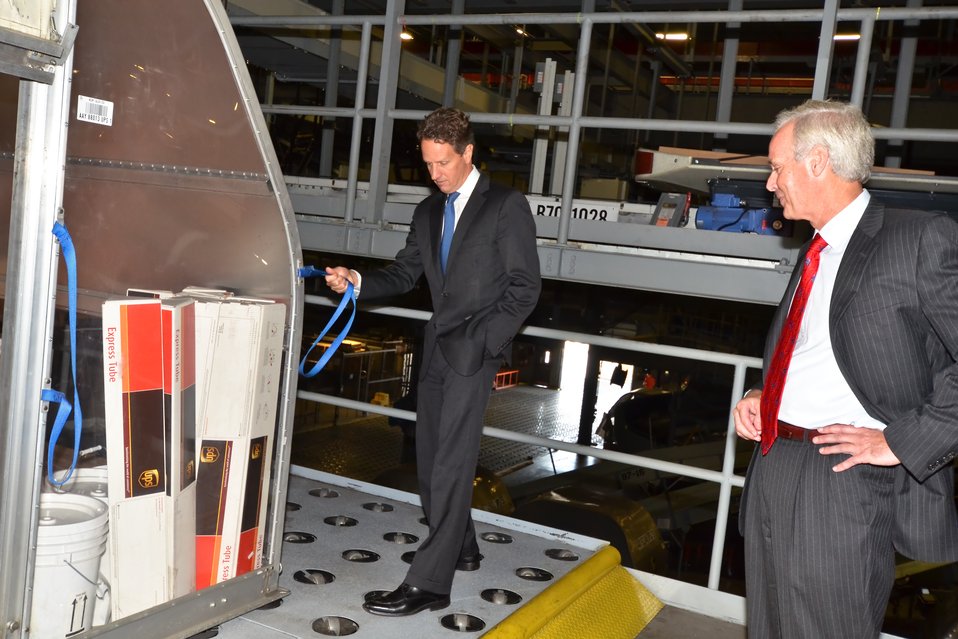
Secretary Geithner Visits UPS

To underscore the importance of investing in our nation’s infrastructure, Secretary Geithner toured UPS Worldport, UPS’s international air hub in Louisville, KY. Worldport is the largest fully automated package handling facility in the world. The operation currently turns over 130 aircraft daily, processing an average of 1.5 million packages a day with a record 2.9 million packages processed on Peak Day 2010.